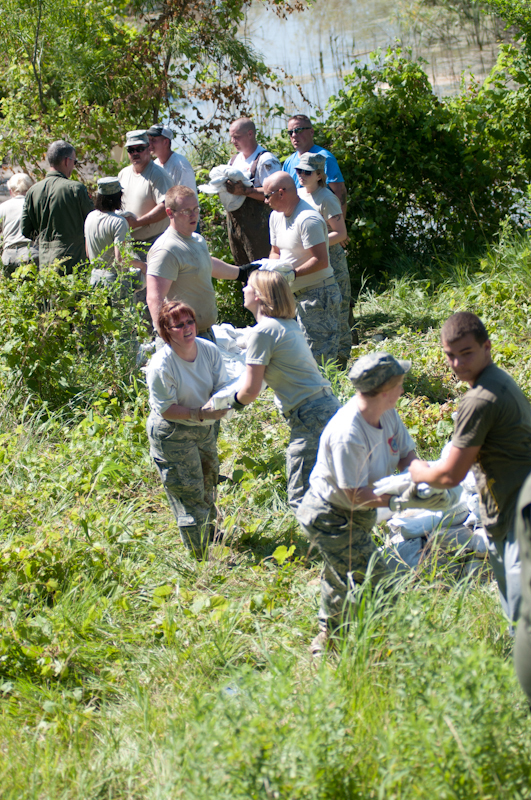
Air Guardsmen fight flood

Airmen from the Missouri Air National Guard's 139th Airlift Wing in St. Joseph, Mo., pass sandbags down a line June 30, 2011, in an effort to fight rising flood waters near Elwood, Kan.